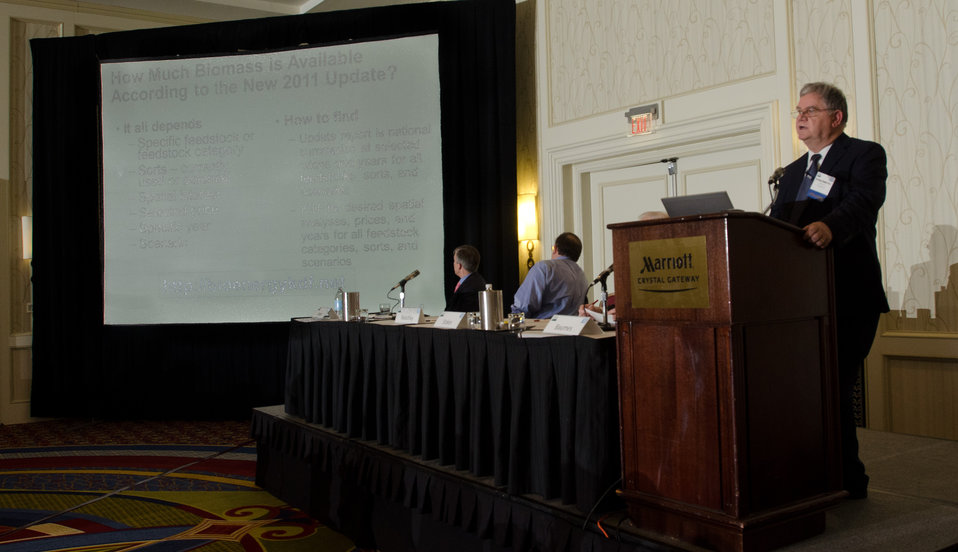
Department of Energy Contractor CNJV LLC Senior Advisor Dr. Bryce Stokes, Ph.D., talked about 'Biomass Potential – the Billion-Ton Study Update' during the Renewable Energy session on “Making Markets for Biomass,” at the 2012 Agricultural Outlook Forum, “Moving Agriculture Forward, Growing, Innovating and Celebrating 150 Years” held at the Crystal Gateway Marriott Hotel in Arlington, Virginia, on Thursday, February 23, 2012. This year’s forum coincides with the 150th anniversary of the Department of Agriculture addressing economics, marketing, research, food safety, nutrition, conservation, rural development, alternative energy, trade and many other agricultural issues.